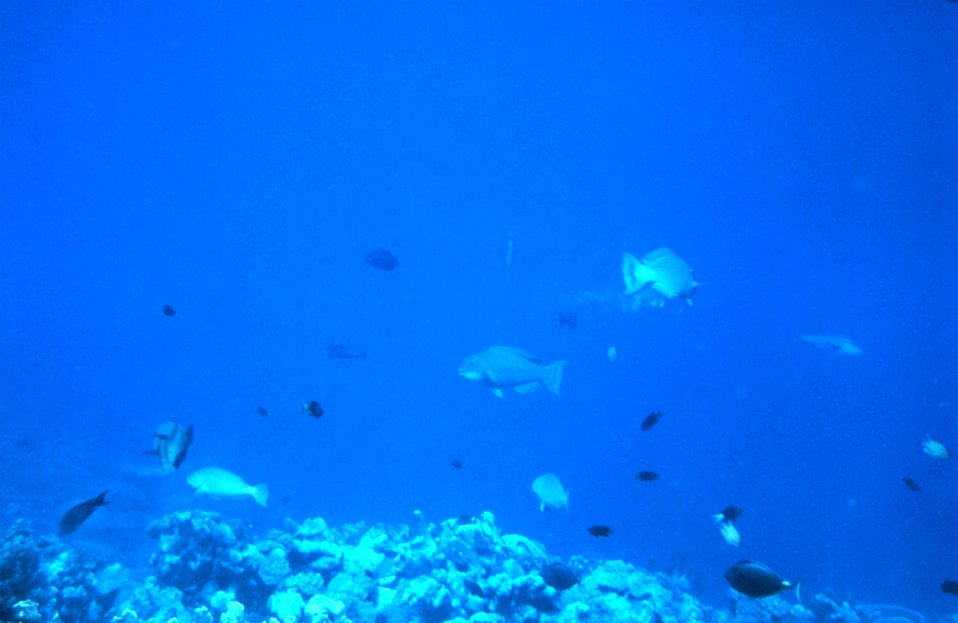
Reef scene with parrotfish in the center.